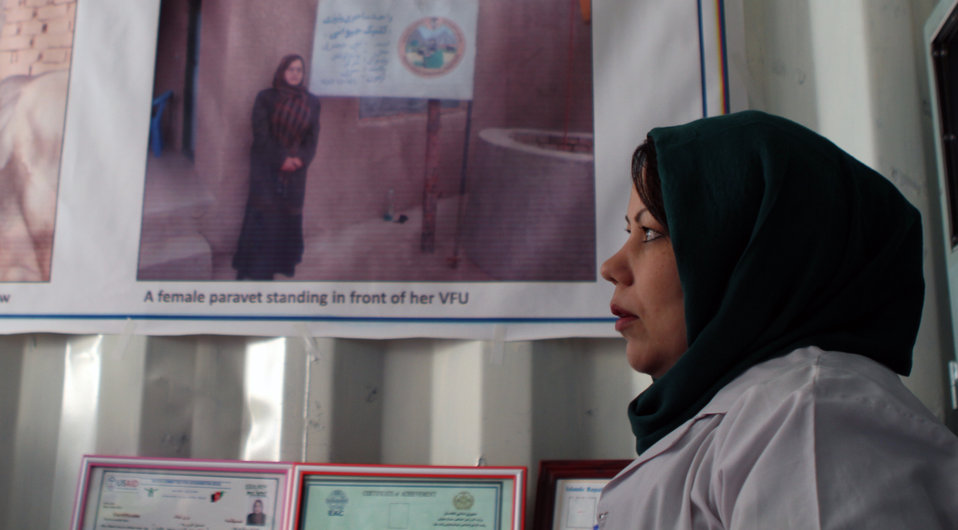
Development of Veterinary...